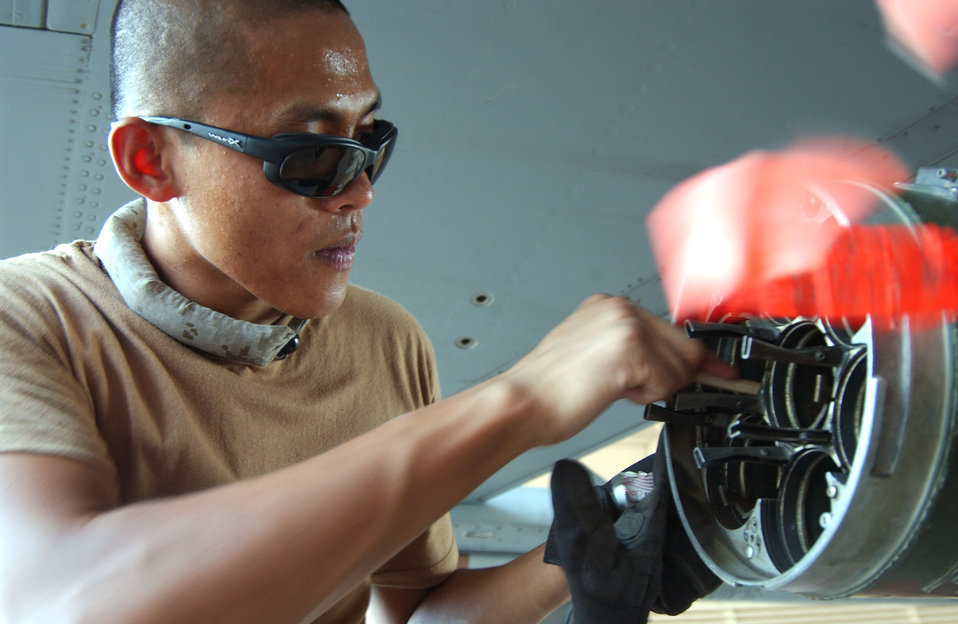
Airman give Falcons talons

Senior Airman Ralph Mendoza prepares a rocket launcher before loading it with rockets at Balad Air Base, Iraq, recently. As the No. 2 man of a three-person team, Airman Mendoza prepares the pylons and hangars for munitions